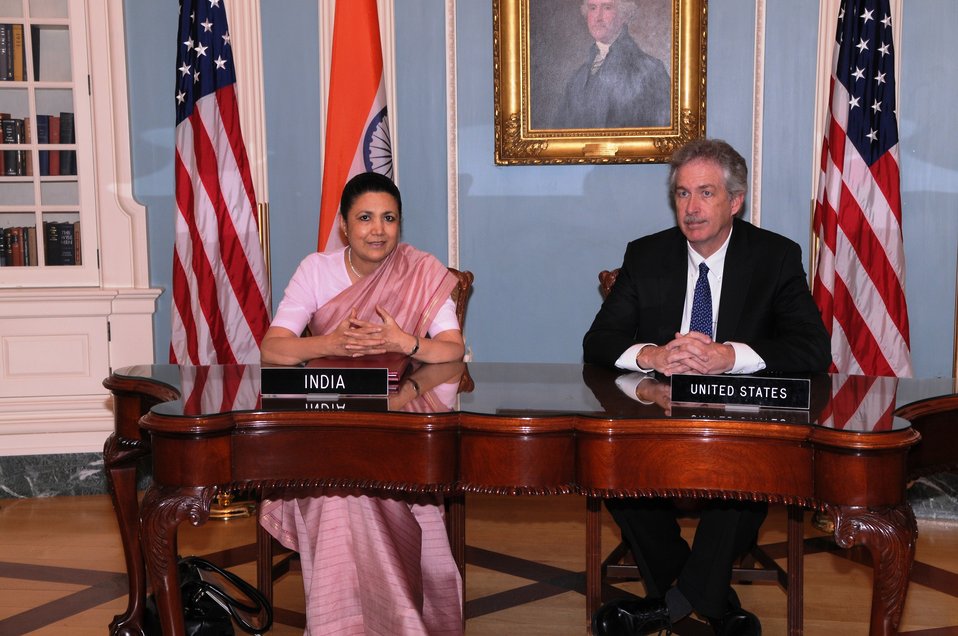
Under Secretary Burns and Indian Ambassador to the U.S. H.E. Meera Shankar Prepare To Sign the U.S.-India Agreement for Nuclear Cooperation Conclusion of Reprocessing Arrangements and Procedures

U.S. Under Secretary of State for Political Affairs William J. Burns (right) and Indian Ambassador to the United States H.E. Meera Shankar (left) prepare to sign the Arrangements and Procedures Pursuant to Article 6 (iii) of the Agreement for Cooperation Concerning Peaceful Uses of Nuclear Energy regarding the reprocessing of U.S.- obligated nuclear material in India at the U.S. Department of State in Washington, D.C., on July 30, 2010.